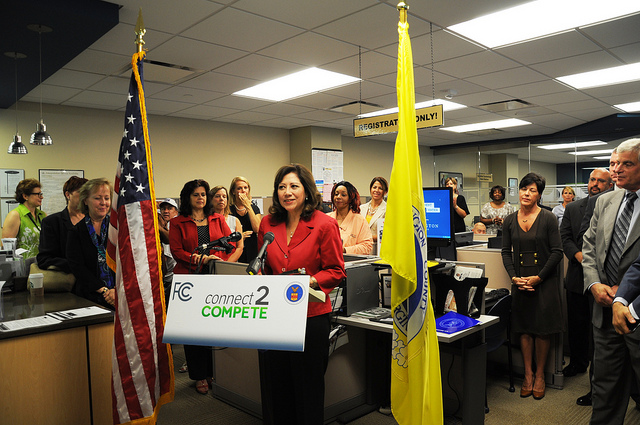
Connect to Compete 7.16.12

Secretary of Labor Hilda L. Solis was announcing a partnership between the FCC and DOL to promote digital literacy for workers.